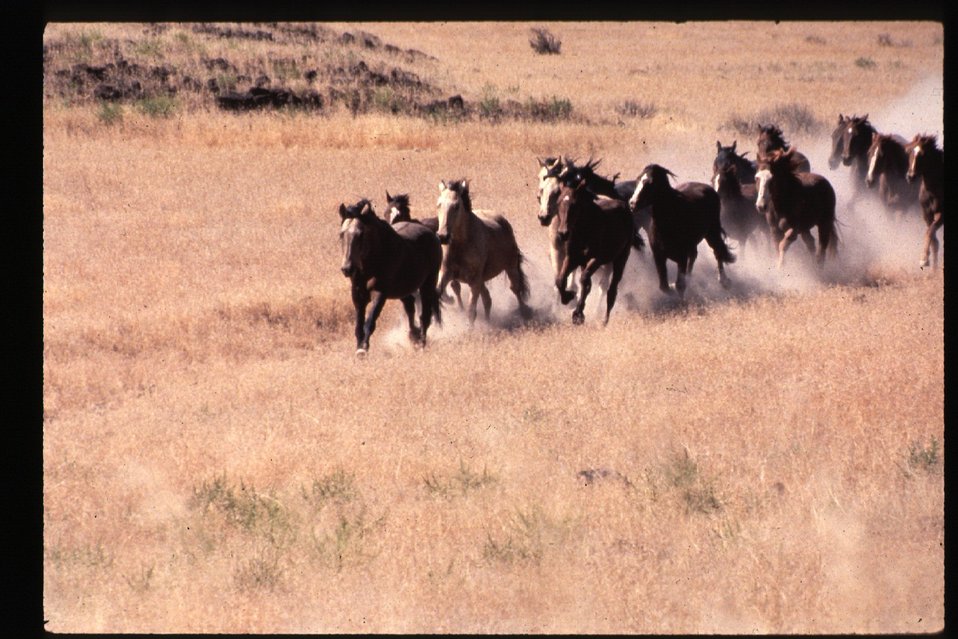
Wild Horse and Burro roundup Vale District Oregon LSRD Lower Snake River District